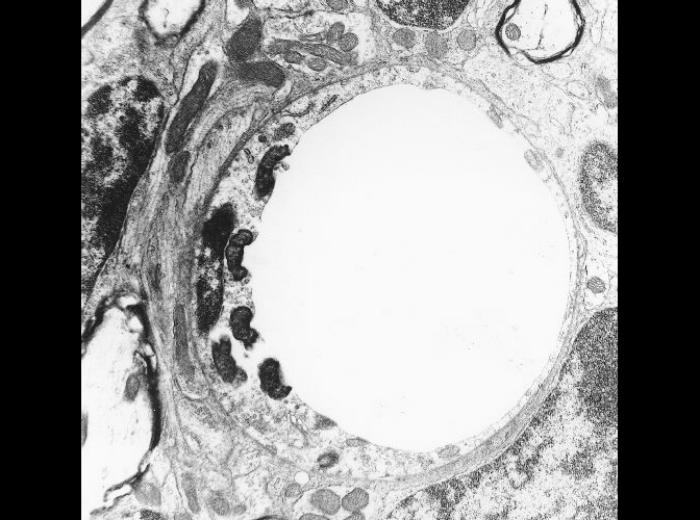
Multiple Rickettsia tsutsugamushi free within the cytoplasm of a mouse brain capillary endothelial cell.